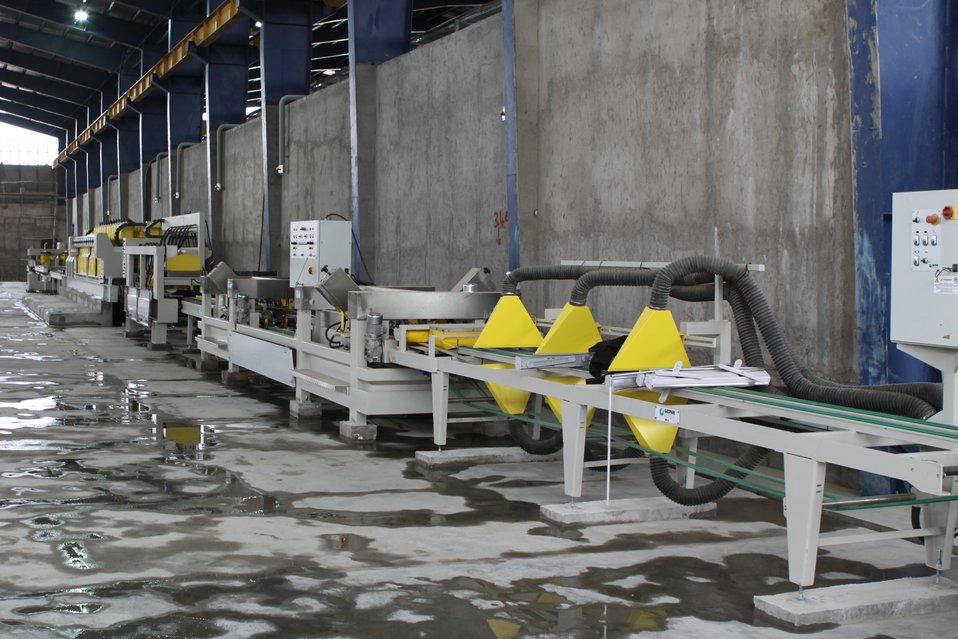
100525 Hirat Marble Conference 183